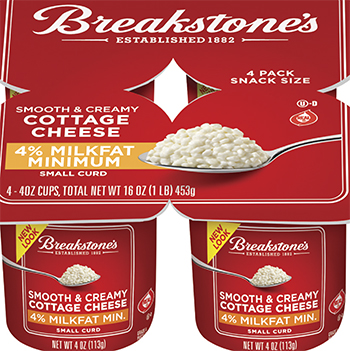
RECALLED – Cottage Cheese products

May 17, 2014 – Product Recall – Kraft Foods Group Voluntarily Recalls Select Cottage Cheese Products Due to Out-of-Standard Storage Temperatures
Certain Knudsen Cottage Cheese, Breakstone’s Cottage Cheese, Simply Kraft Cottage Cheese and Daily Chef Cottage Cheese Products Included in the Recall
.